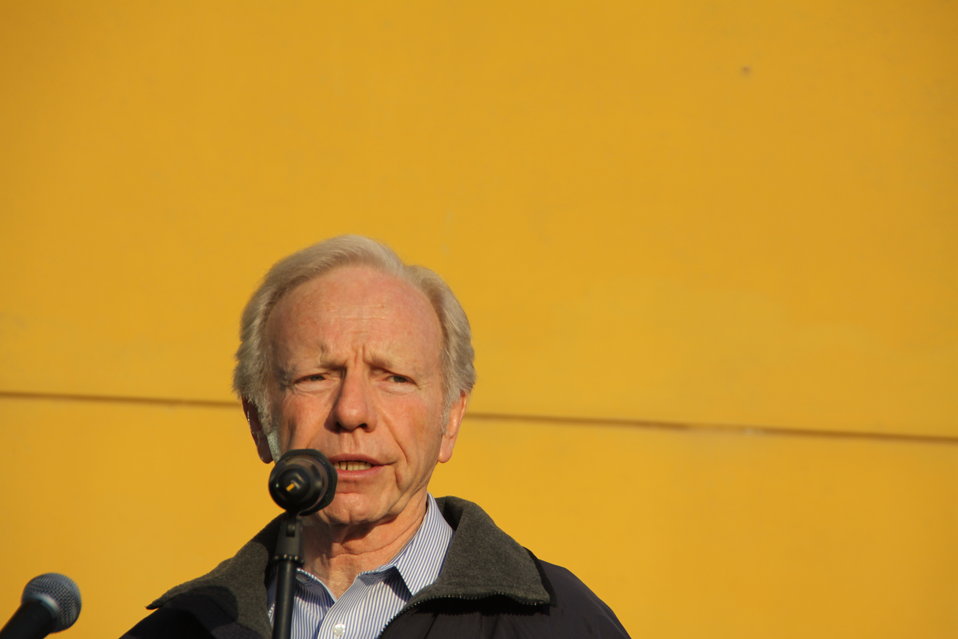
Senator Lieberman